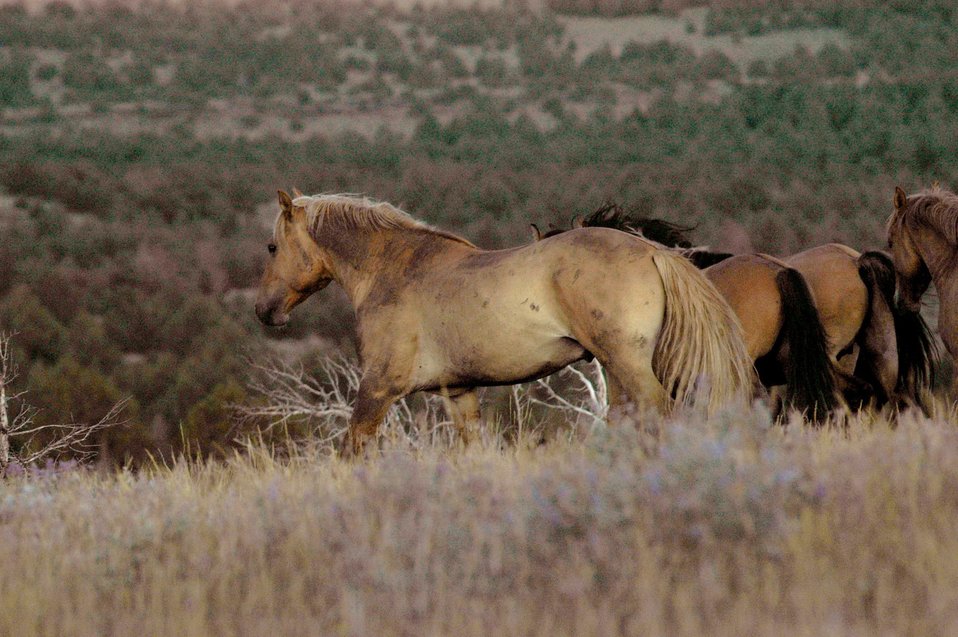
Kiger horses roam the plateaus of the Kiger Wildhorse Herd Management Area near Steens Mountain in Southeastern Oregon.